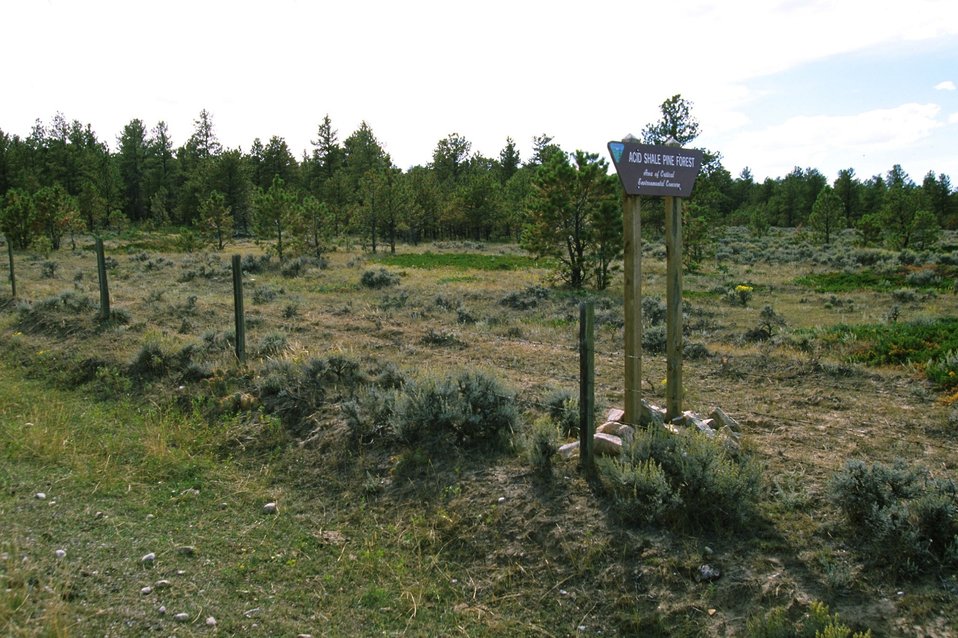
Acid Shale Area of Critical Environmental Concern (ACEC) with sign